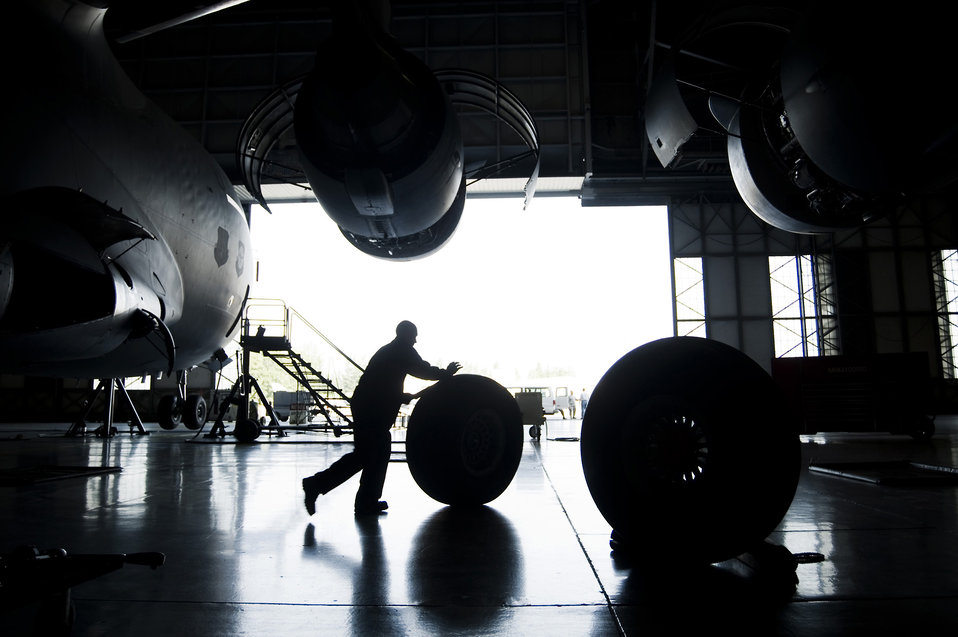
Maintenance Airmen keep C-17 wheels turning

Airman Andrew Boomershine relocates a serviceable C-17 Globemaster III tire to a staging area Aug. 5, 2010, in a hangar at Joint Base Lewis-McChord, Wash. Airman Boomershine is a crew chief assigned to the 62nd Maintenance Squadron.